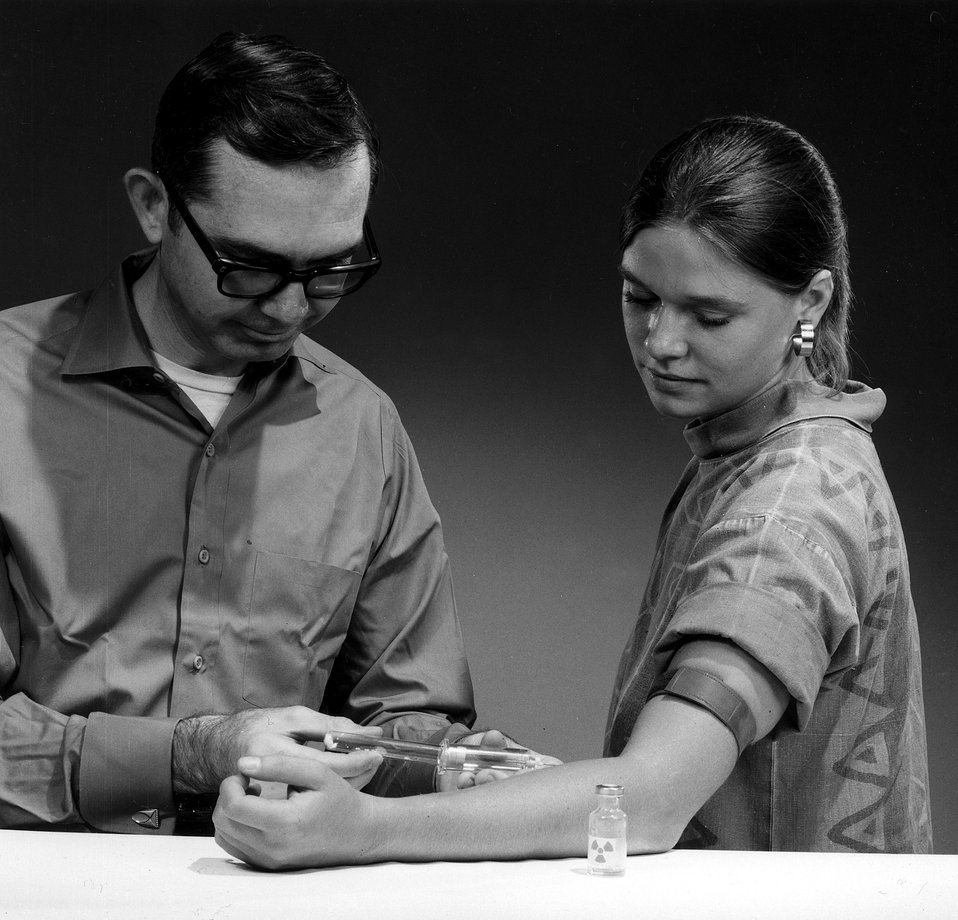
A diagnostic kit for labeling a patient's own red blood cells has been developed at Brookhaven. It is expected to contribute to diagnosis of vascular disorders, including heart, spleen, and blood measurements.